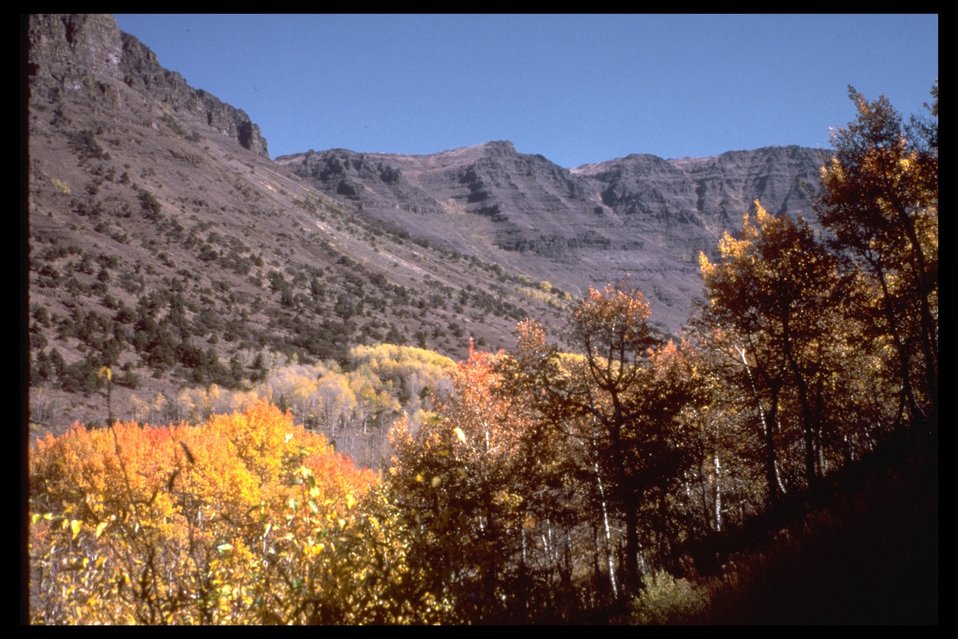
Big Indian Gorge looking at fall colors in the High Steens WSA. (2-85F)